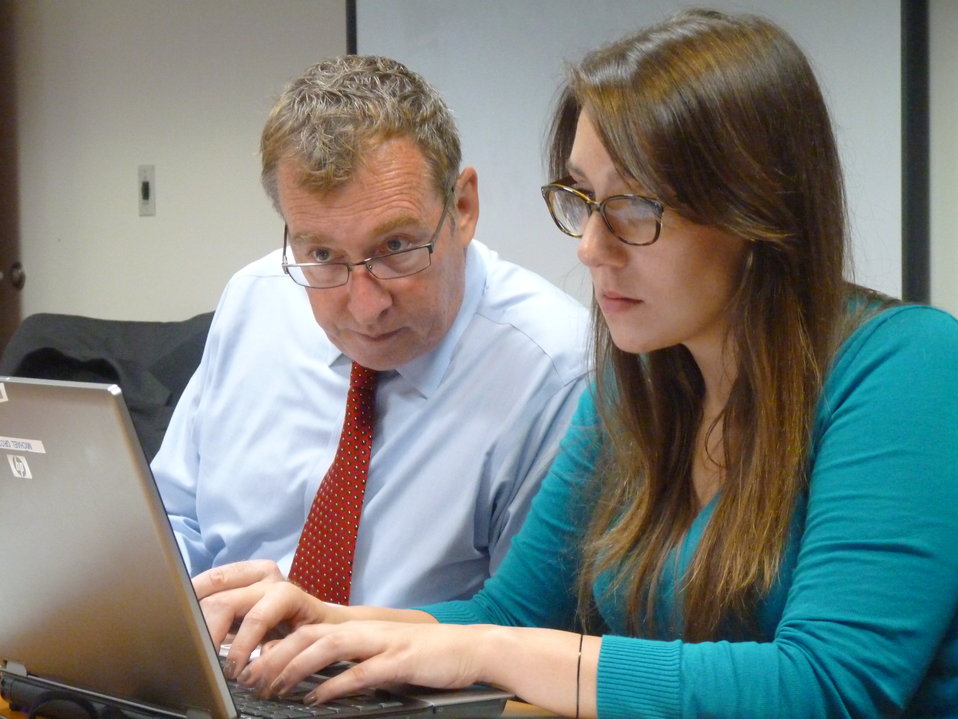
Twitter QandA on Absentee Voting Information for U.S. Citizens Abroad

Deputy Director of American Citizen Services for the U.S. Department of State's Bureau of Consular Affairs Jack Markey responds to questions from U.S. citizens abroad on absentee voting information during a Twitter Q&A on August 28, 2012.